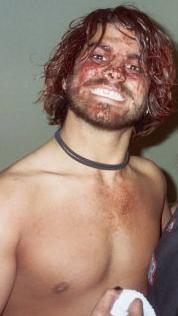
Jacobs, hours after the cage match against Whitmer, missing half of his front tooth.
Category:Professional wrestling free use media